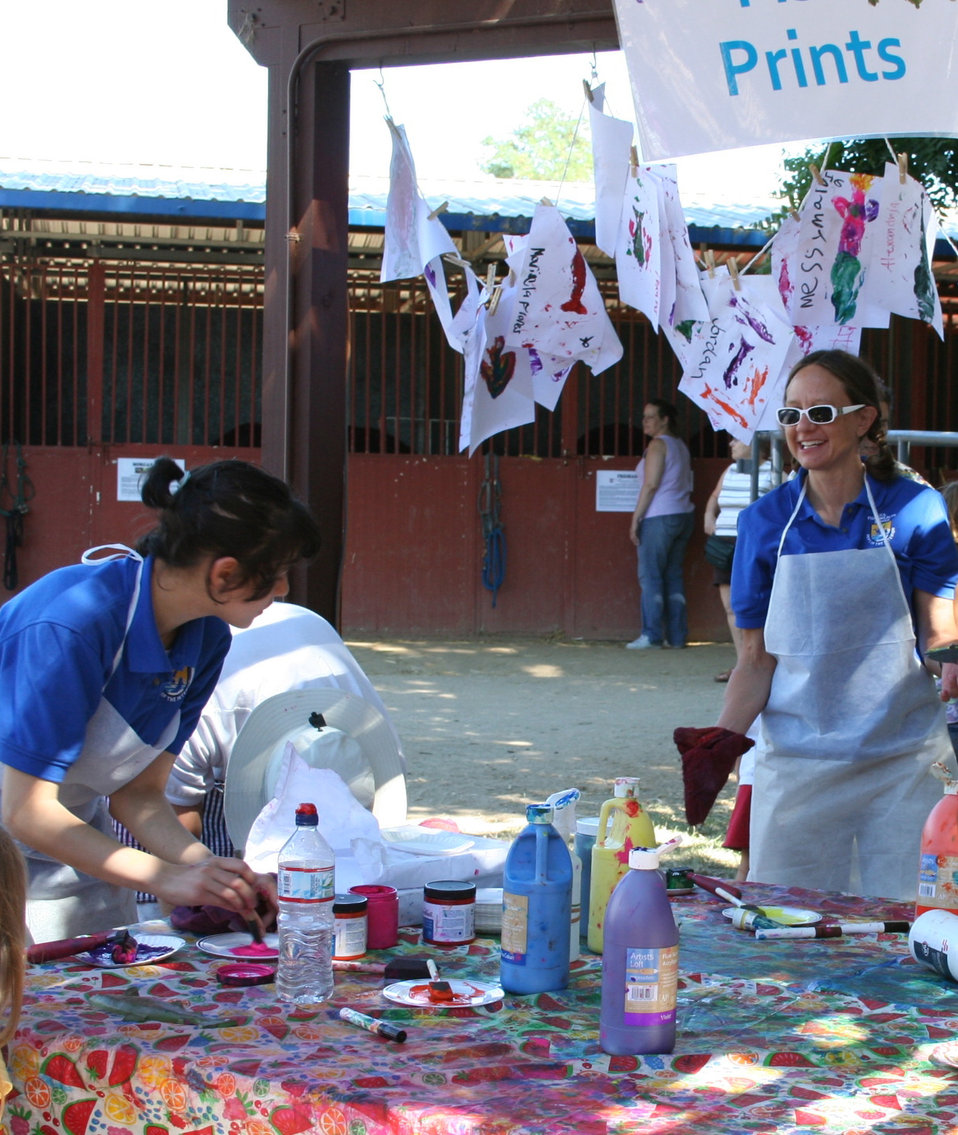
USFWS workers at the California State Fair

For the first time DOI agencies [US Fish & Wildlife Service, Bureau of Reclamation and Bureau of Land Management] joined together to host an America's Great Outdoors Booth at the California State Fair in Sacramento, Calif., July 14 - 31.

The booth included informational panels and displays as well as a children's activity area. Activities: wildlife masks, temporary tattoos, water-cycle bracelets, fish prints, touch boxes, scat bingo, a green-screen, coloring and bird bingo. Five days a week live raptors, snakes and bats were brought in.

About 10,000 children visitied the booth during the 18-day fair.